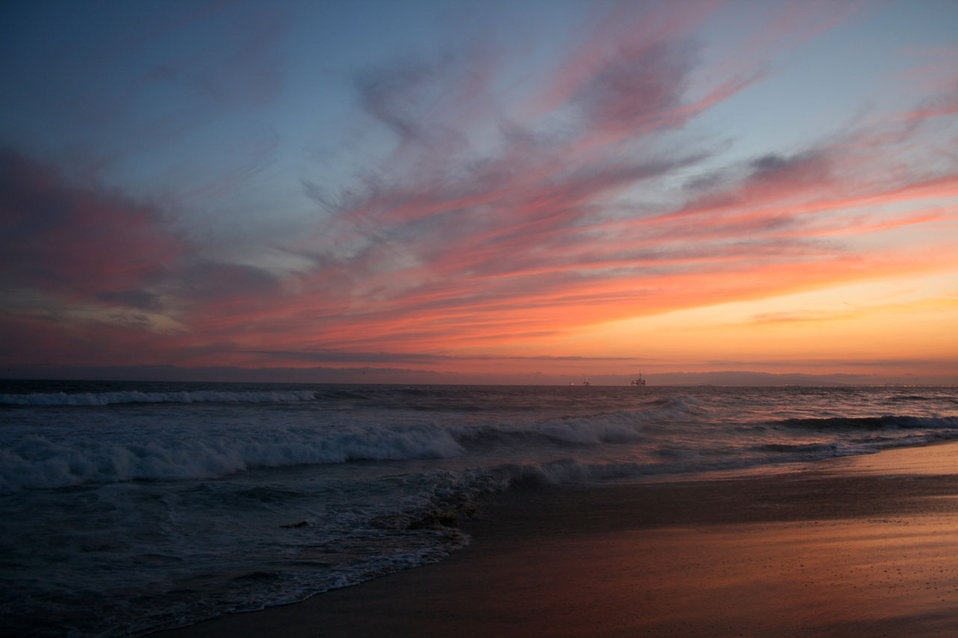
Surfside sunset

Shot on huntington beach, california, 7 june 2009.